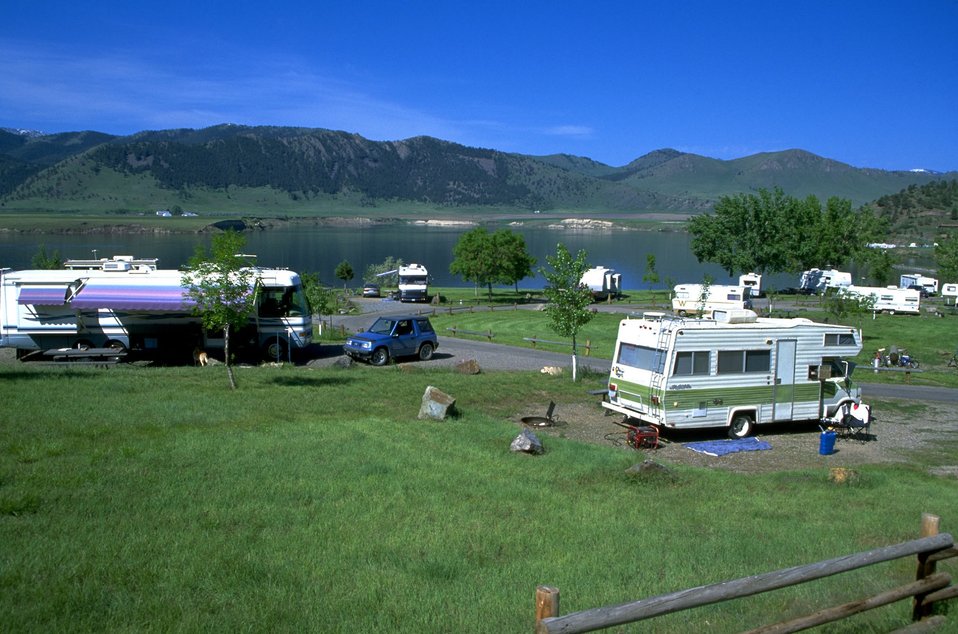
Camping at Holter Lake Campgrounds near Wolf Creek MT